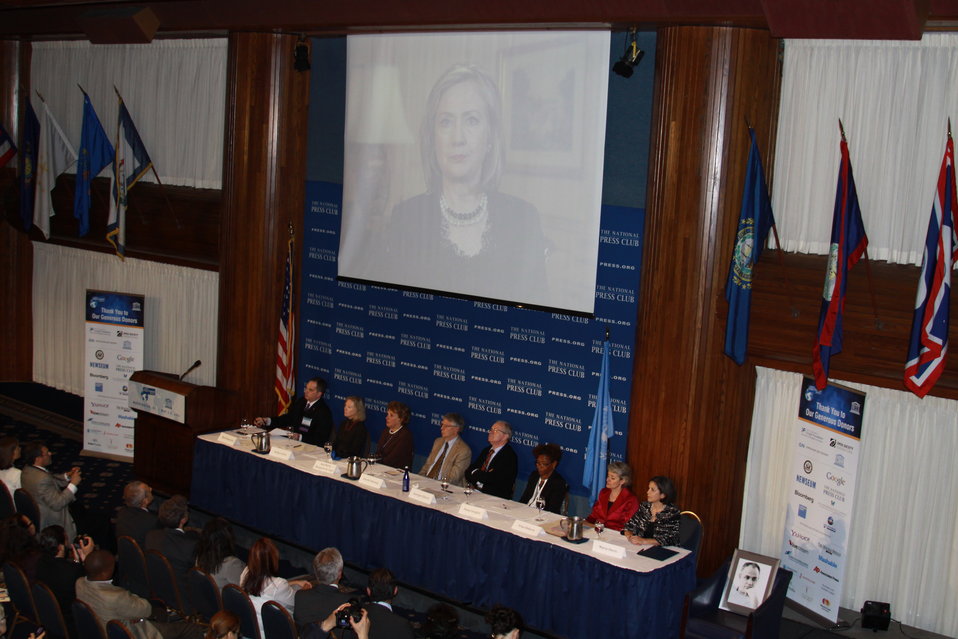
Secretary Clinton Delivers a Video Message

U.S. Secretary of State Hillary Rodham Clinton delivers a video message to the closing ceremony of the World Press Freedom Day 2011 Global Conference at the National Press Club in Washington, D.C., on May 3, 2011.